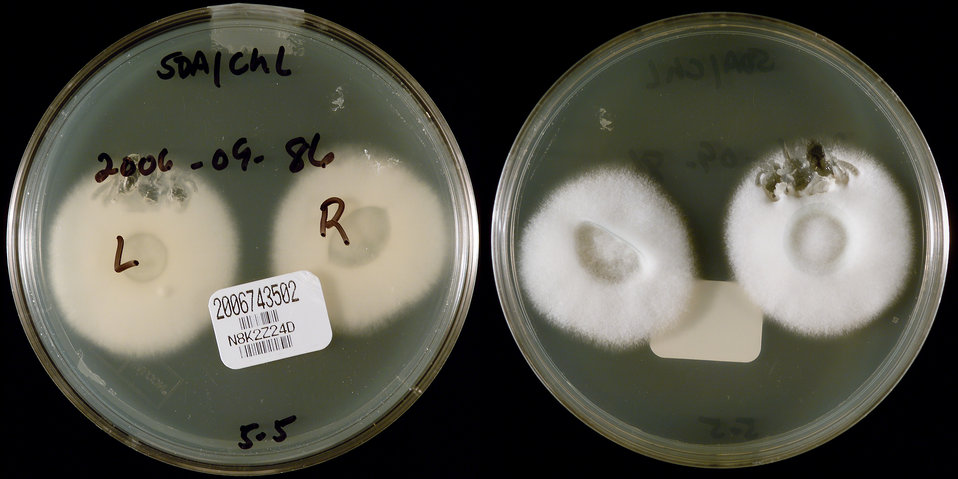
This image depicted two sides of a Petri dish, which had been inoculated with specimens consisting of the right and left contact lenses, visible on the culture medium, obtained from a Pennsylvania Fusarium keratitis-patient, and had subsequently grown a filamentous colony of Fusarium solani Species Complex (FSSC Group#1) fungal organisms. The type of agar medium in the case of this specimen was Sabouraud Dextrose (SAB). While it is not unusual for Fusarium to cause keratitis, it was the number of affected individuals, which had increased dramatically, predominantly in persons wearing contact lenses, that had warranted this epidemiologic study. The laboratory received cultures which came from two sources: Fusarium spp. isolated from the eyes of patients with fungal keratitis, and cultures from contact lenses, cases and/or lens solution.